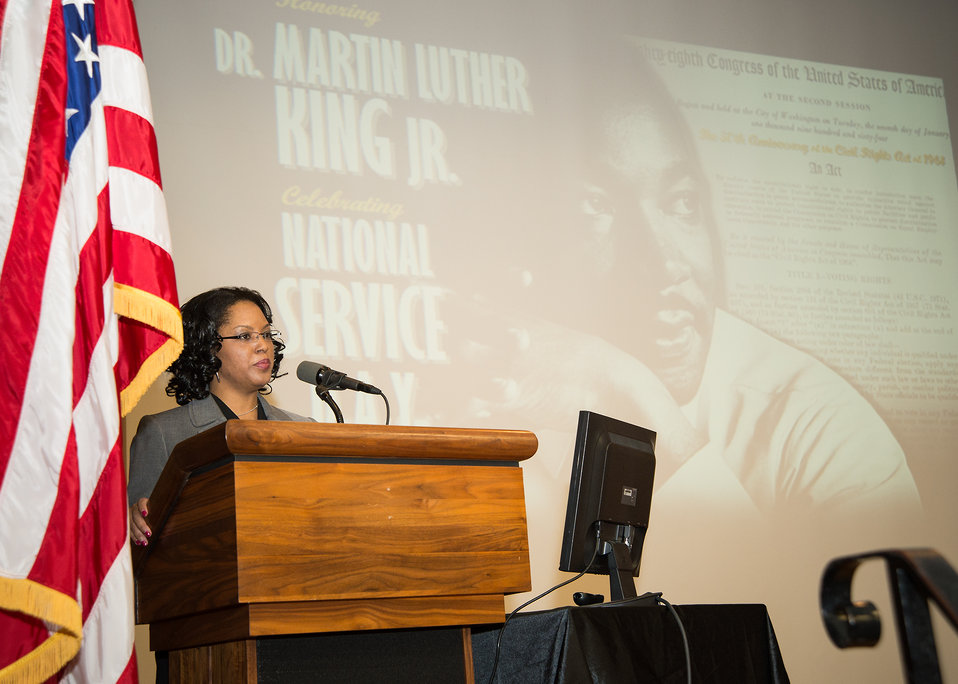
U.S. Department of Agriculture (USDA) Office of Human Resources Management Acting African American Program Manager Ellita Willis speaks at USDA's Dr. Martin Luther King Jr. and National Service Day in Washington, D.C. on Wednesday, Jan. 15, 2014.